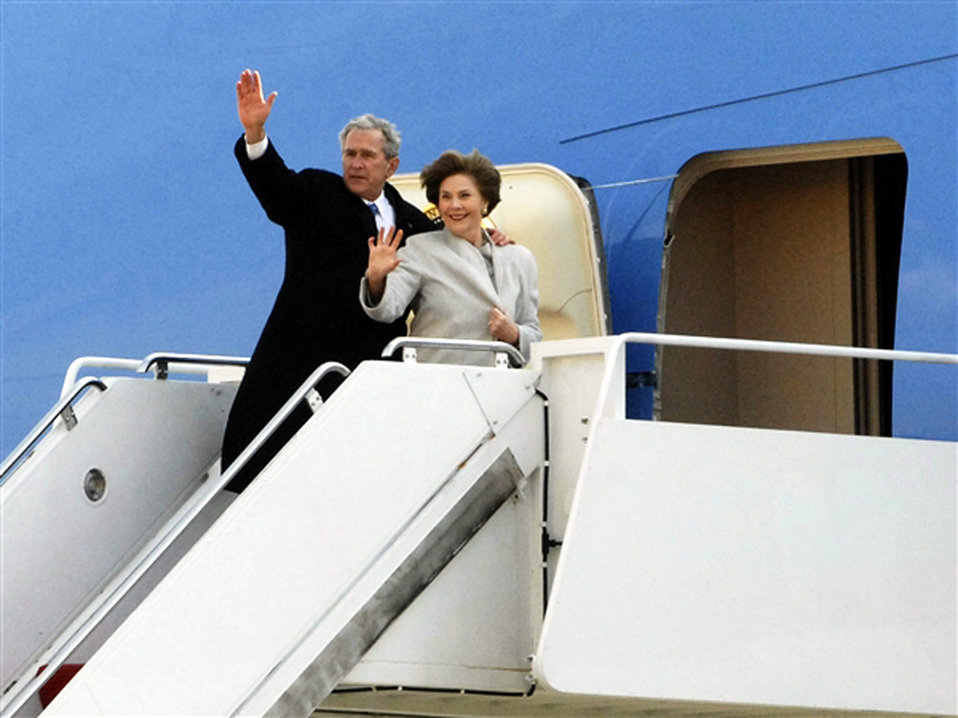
Good-bye!

Former President George W. Bush and First Lady Laura Bush give a final wave to the crowd of more than 1,000 people gathered Jan. 20 at Andrews Air Force Base, Md., before their departure home.